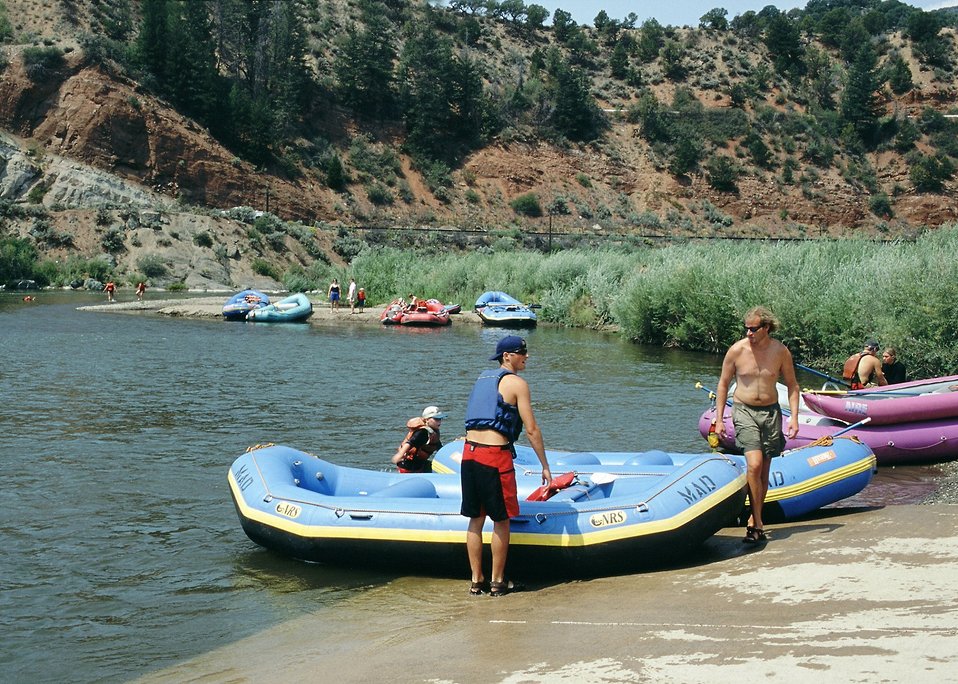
Radium Launch